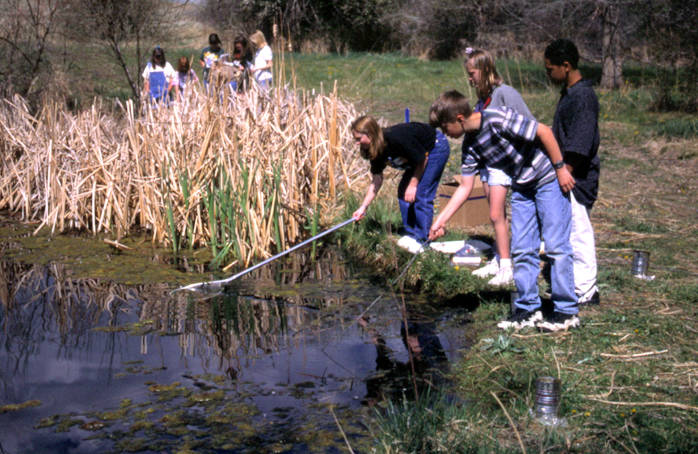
Two Ponds National Wildlife Refuge

Children netting in pond on Two Ponds National Wildlife Refuge in Colorado in 2008.